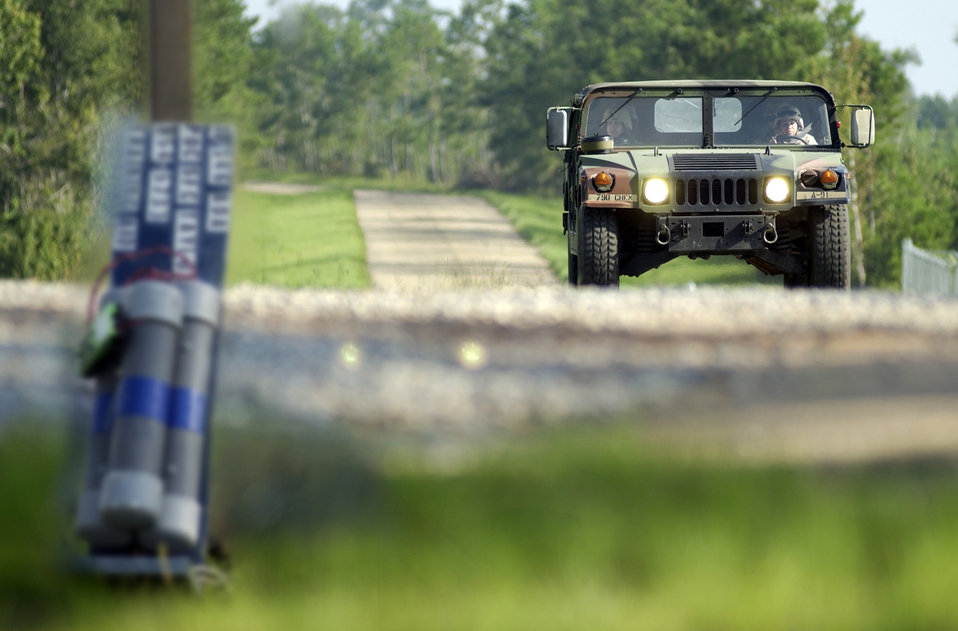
Search techniques

Airmen search for land navigation points and improvised explosive devices using techniques learned at Camp Shelby, Miss. Camp Shelby is one of several Army installations providing training to servicemembers preparing to deploy to Southwest Asia.